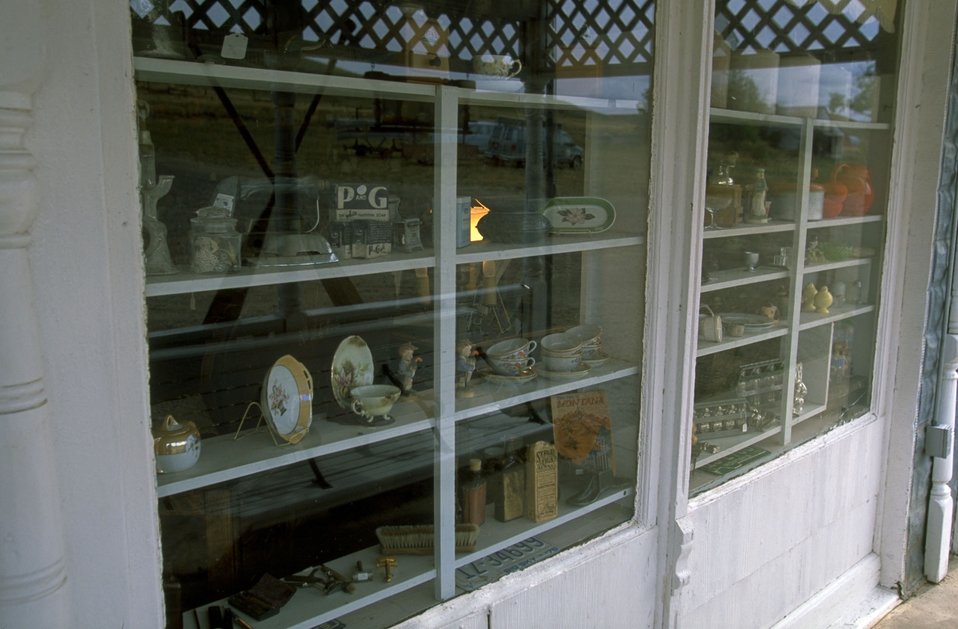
Virgelle Merchantile near Loma